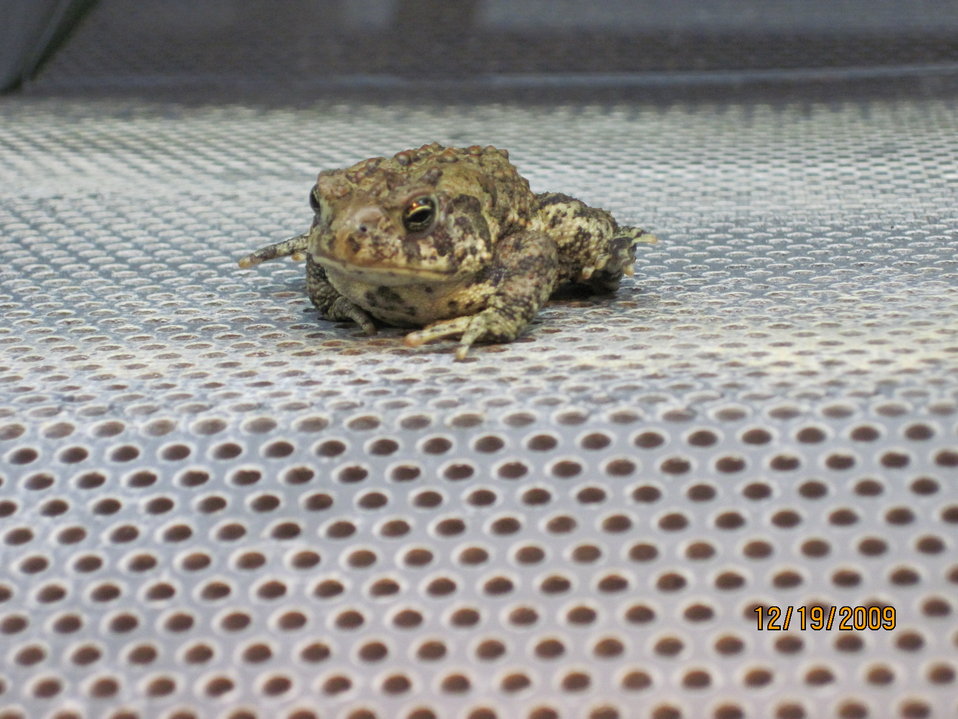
Wyoming Toad

SInce breeding began at the Saratoga Fish Hatchery in 1998 they have released 53,866 toads back into the wild. The station currently hosts 80 to 120 toads at one time.